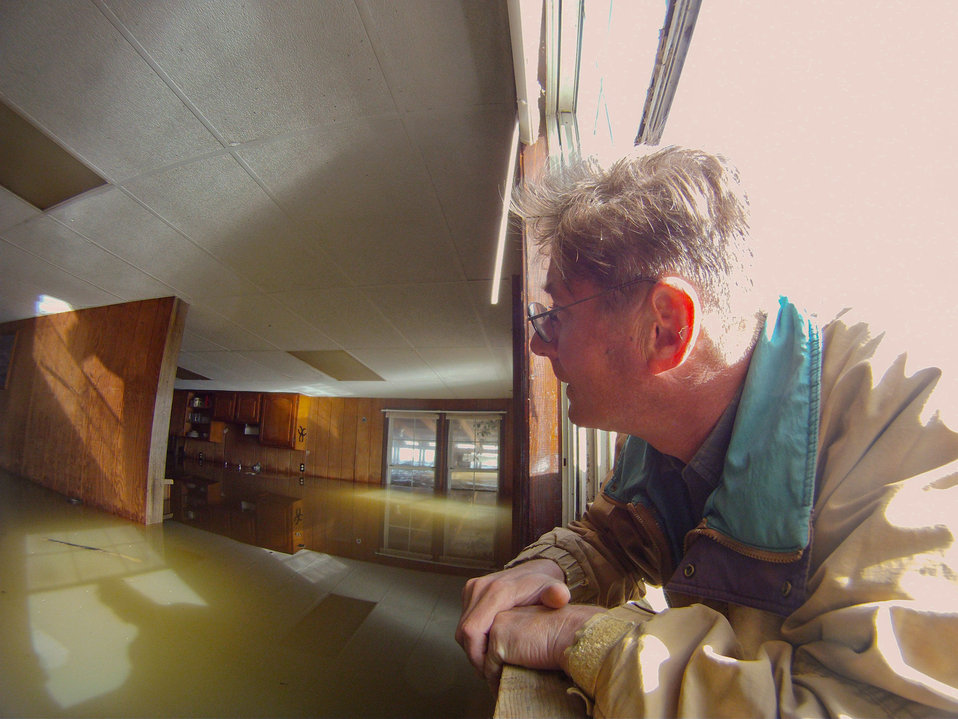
Joe Higdon found his ranch house, and looks in amazement at his living room flooded with Mississippi River floods waters on President’s Island near Memphis, TN on Sunday, May 15. 2011. This was a secondary home for his family.